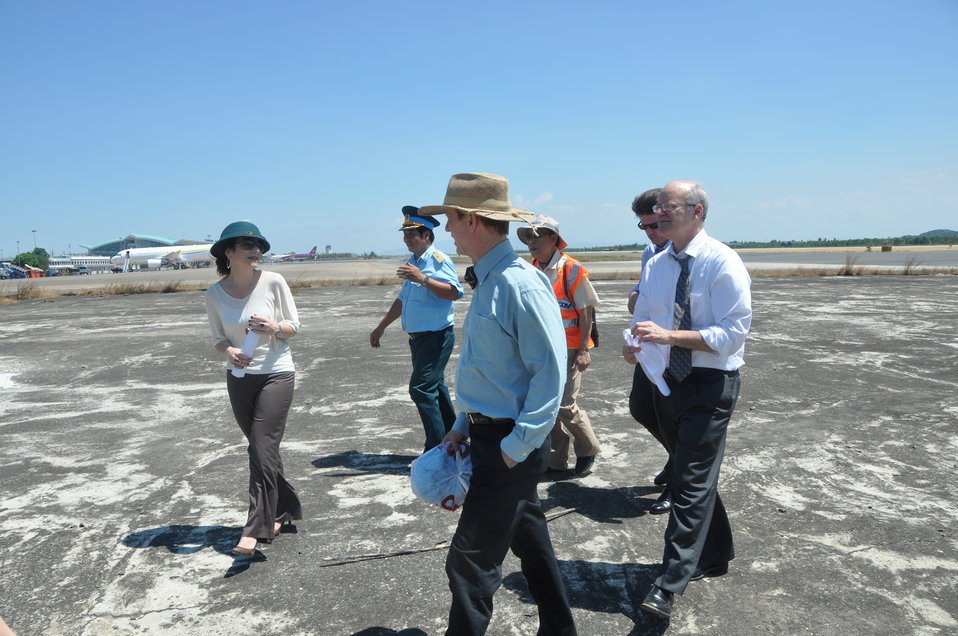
USAID Deputy Administrator Donald Steinberg and delegation visit Danang Airport

USAID Deputy Administrator Donald Steinberg Visits Vietnam